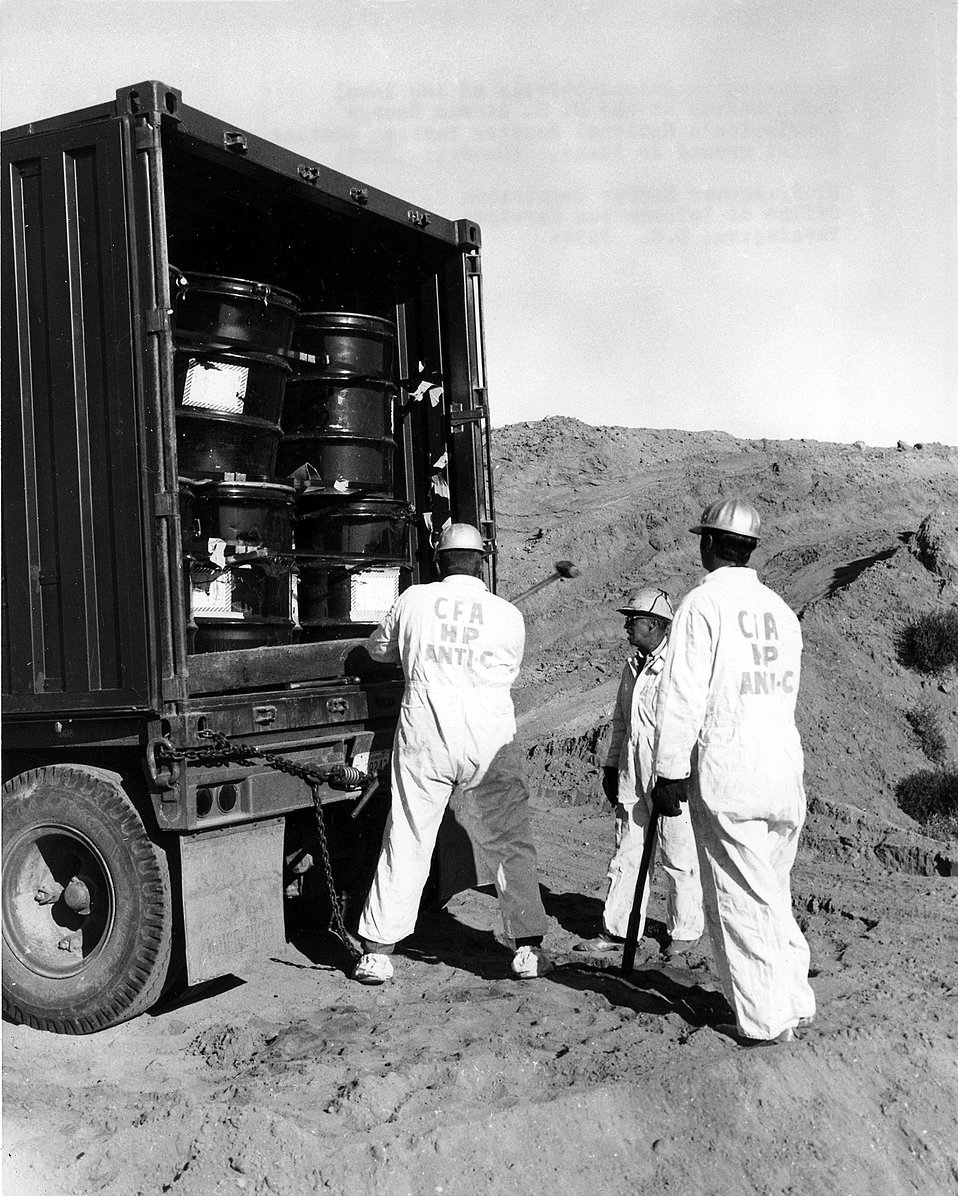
Preparing to unload barrels of low level solid wastes.